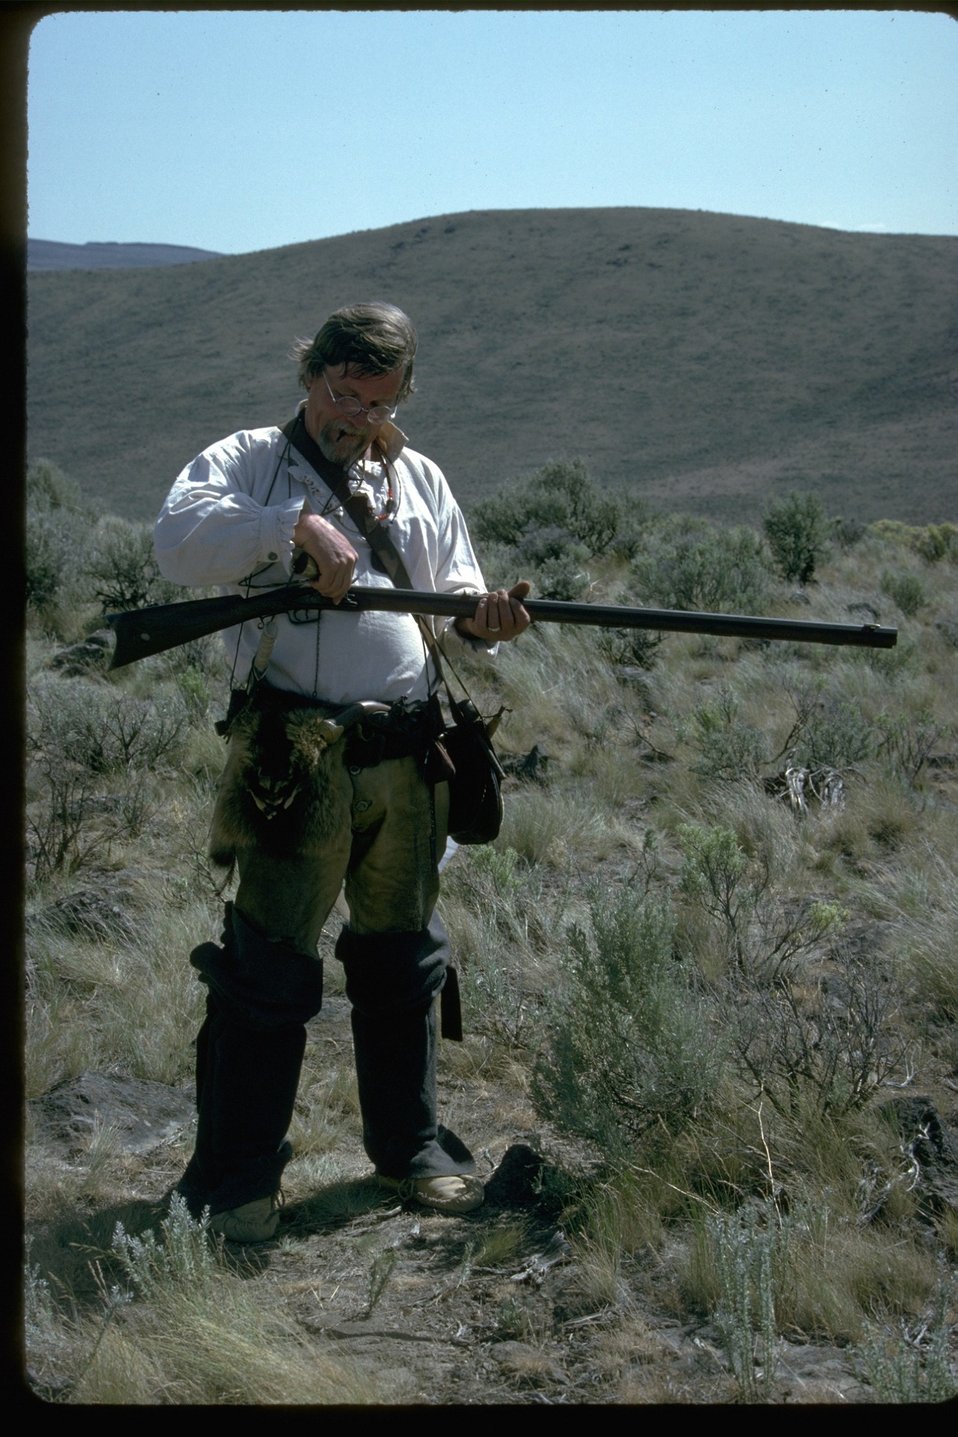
Frontiersman (pioneer re-enactor.)